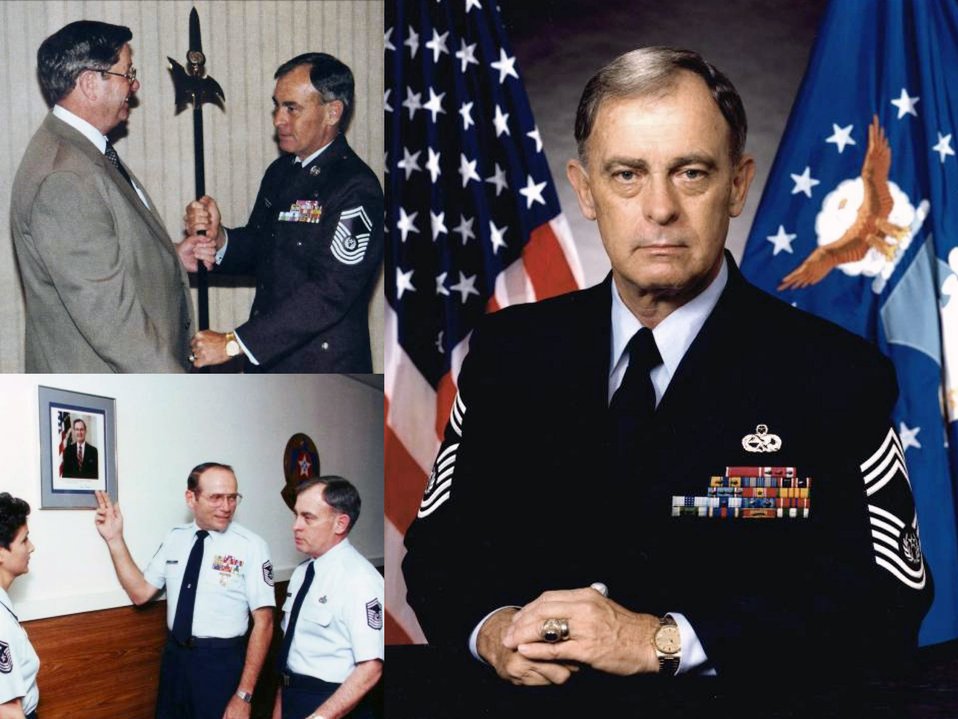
Chief Pfingston loses fight with cancer

Retired Chief Master Sgt. Gary Pfingston, the 10th chief master sergeant of the Air Force, died of cancer June 23 in San Antonio.